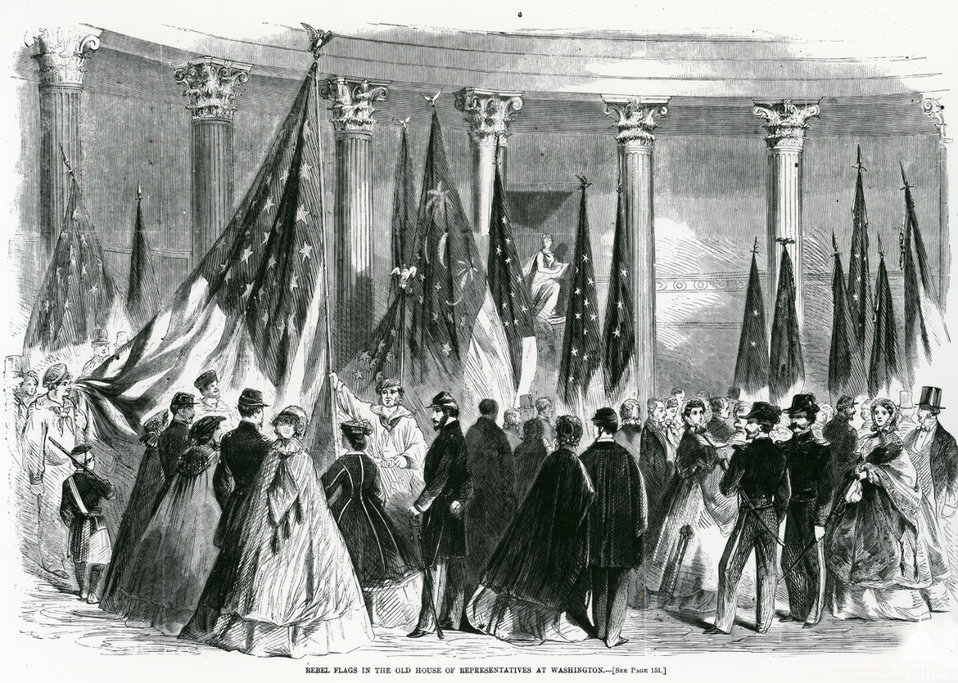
Troops in Statuary Hall

Union Troops holding captured Confederate flags in Statuary Hall.